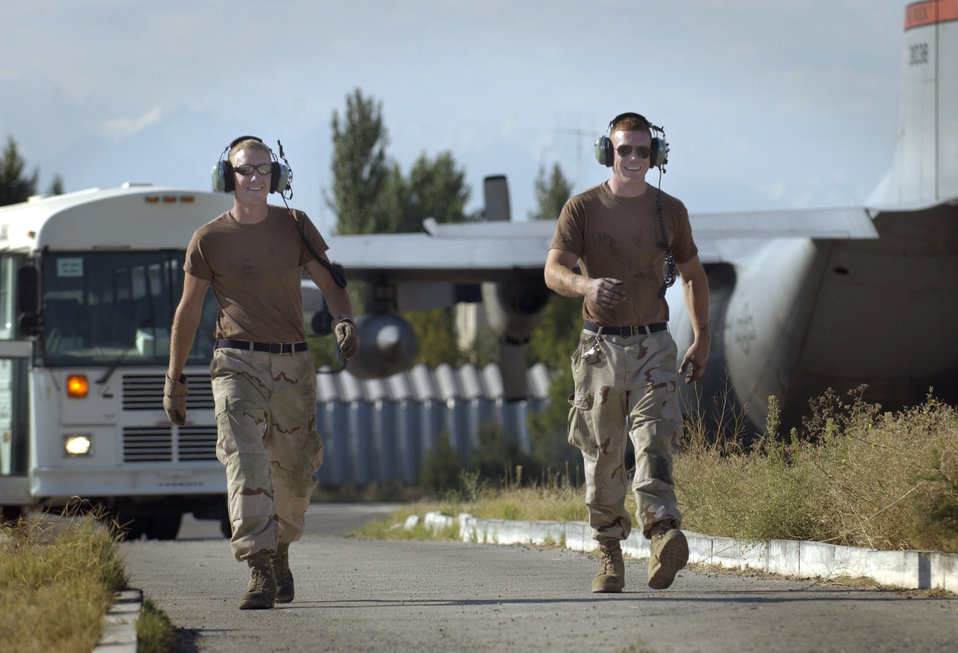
Maintaining the Herc

MANAS AIR BASE, Kyrgyzstan -- Senior Airman Derek Smith and Airman 1st Class Alex O'Donnell respond to a request to recover a C-130 Hercules that landed. They are aircraft maintainers assigned to the 376th Expeditionary Air Maintenance Squadron and are deployed from Little Rock Air Force Base, Ark.